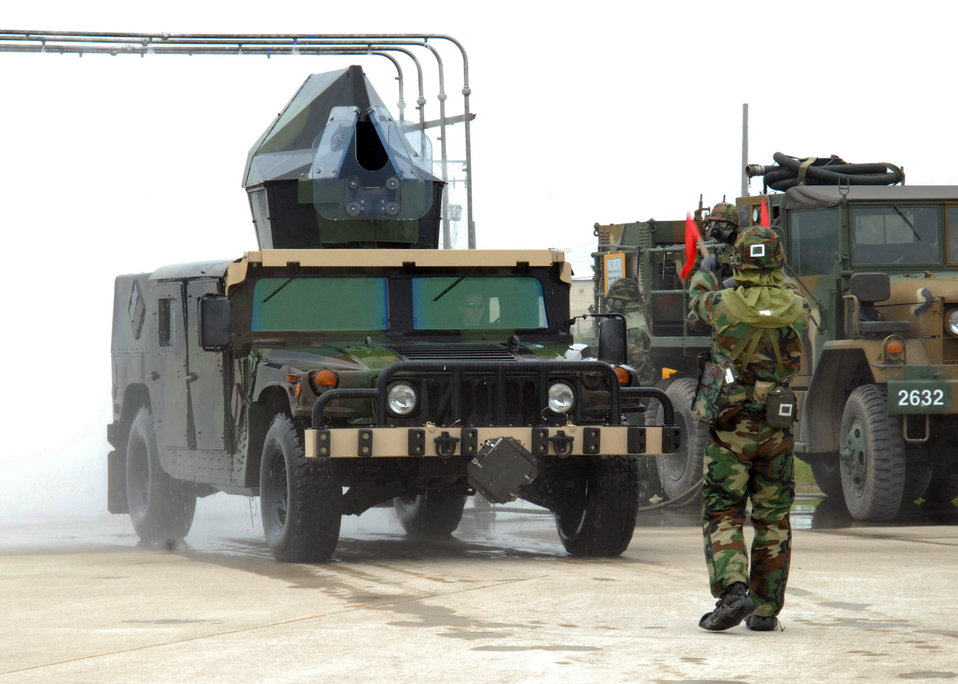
South Korean army UAVs enhance training at Kunsan

A South Korean army soldier guides a Humvee from the 8th Civil Engineer Squadron through a vehicle decontamination station June 24 at Kunsan Air Base, South Korea. South Korean army soldiers demonstrated the capabilities of their nuclear, biological and chemical detection technology during a two-day combined training session here June 23 and 24.